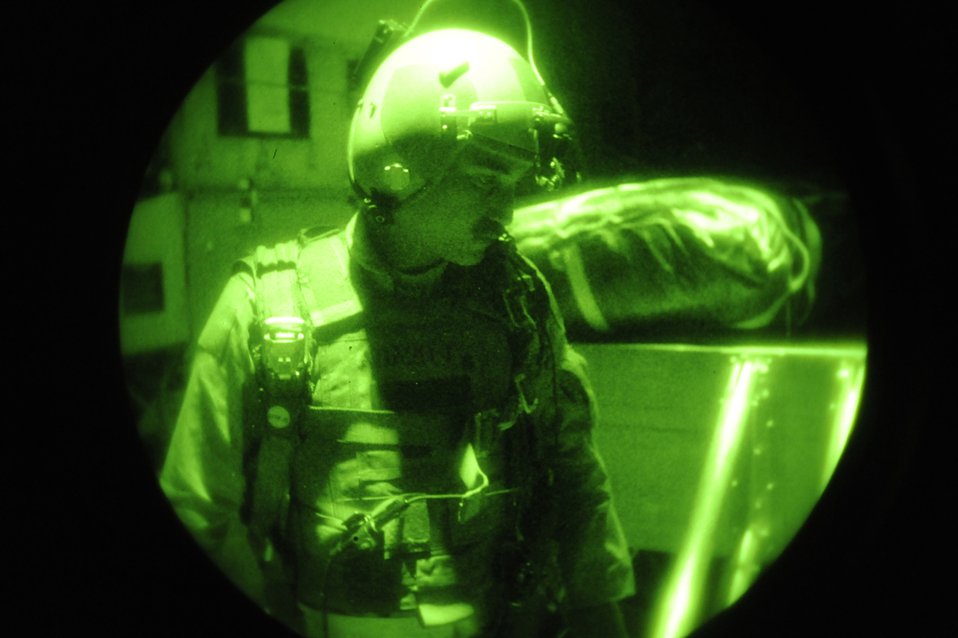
Airdrop fuels austere Afghan locations

Tech. Sgt. Wayne Witter prepares for a night airdrop to deliver JP-8 fuel to troops on the ground July 17 over southwestern Afghanistan. Sergeant Witter is a C-130J Super Hercules loadmaster assigned to the 772nd Expeditionary Airlift Squadron at Kandahar Airfield, Afghanistan.